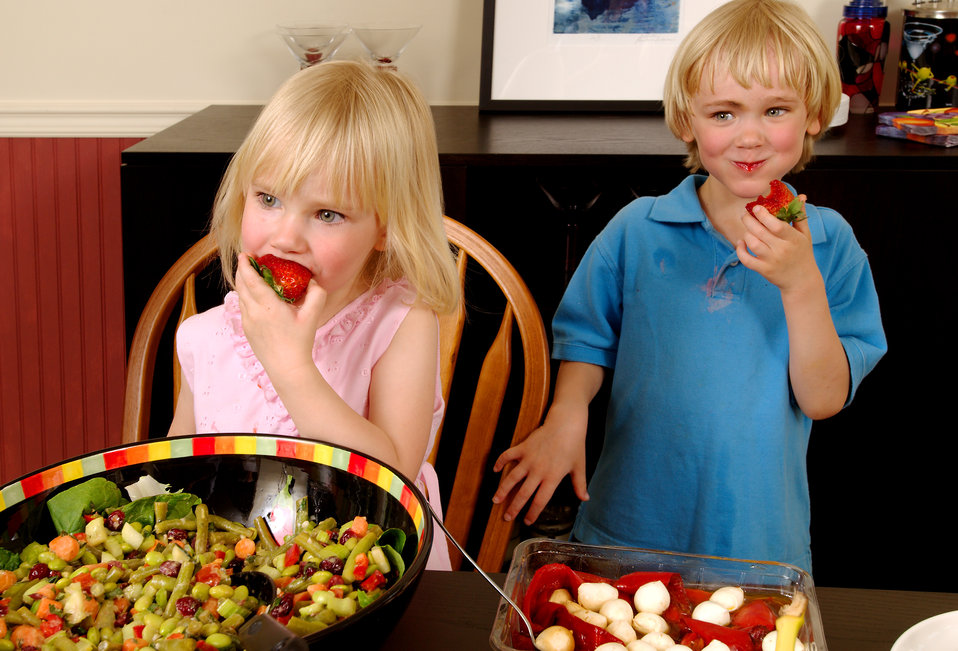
Here, two young children were at a dining table, upon which was plated a large quantity of foods representing a number of different food groups: grains, fruits, vegetables, milk products, meats/poultry/fish, and nuts/seeds/legumes. All these foods are quite tasty, but some are more nutrient-dense than others, while others are more calorie-dense than the rest. It's refreshing to see that these children made the choice to eat a highly-nutritious, antioxidant, vitamin-rich strawberry over some of the more calorie-dense foods that were freely available.